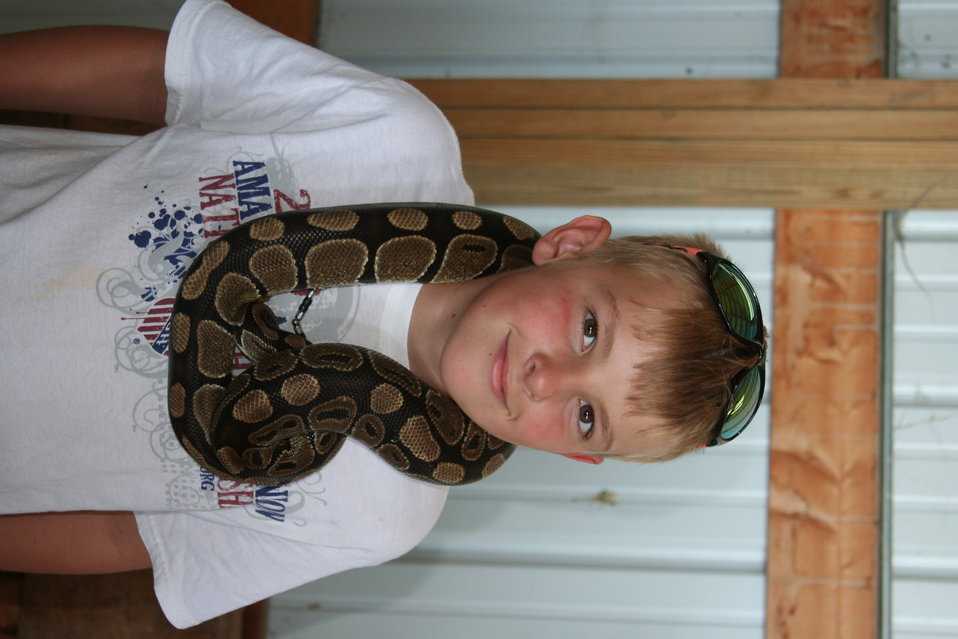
2011 Huron Prairie Fest